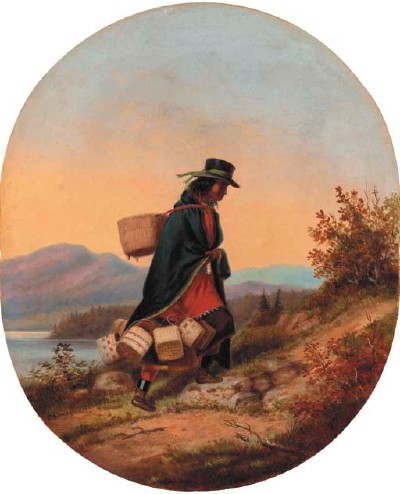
Indian Basket Seller in Autumn Landscape, oil paintings by Cornelius Krieghoff, 11.2 x 9.2 in.